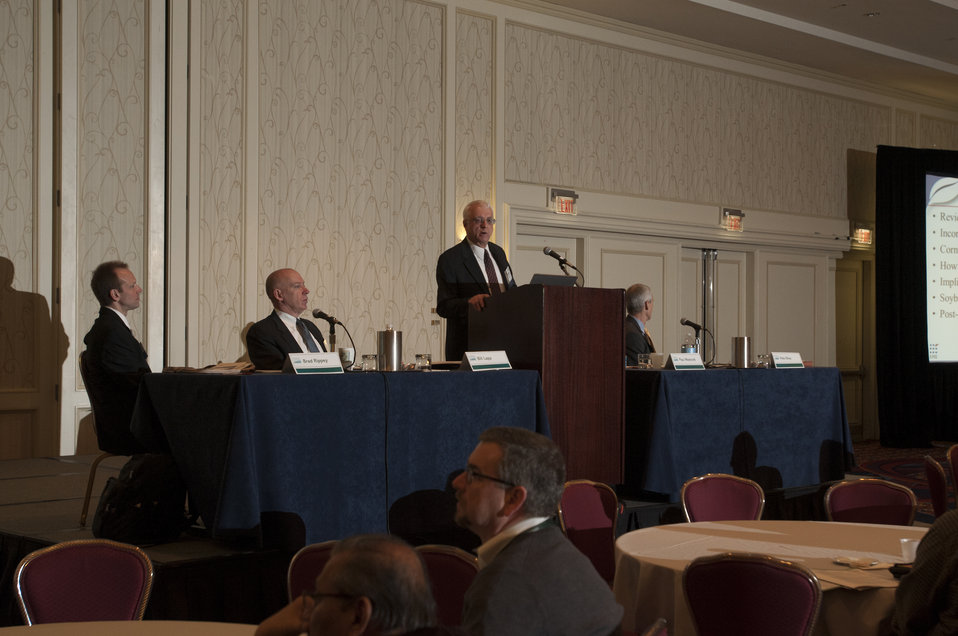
The U.S. Department of Agriculture (USDA) 2013 Agricultural Outlook Forum was held at the Crystal Gateway Marriott Hotel in Arlington, VA on Friday, Feb. 22, 2013. The breakout session on Grains and Oilseeds Outlook analyzed the metrological factors behind last summer’s historic drought, evaluated the effects of summer weather on corn and soybean yields, and provided the 2013 supply and demand outlook for wheat, corn, and soybeans.